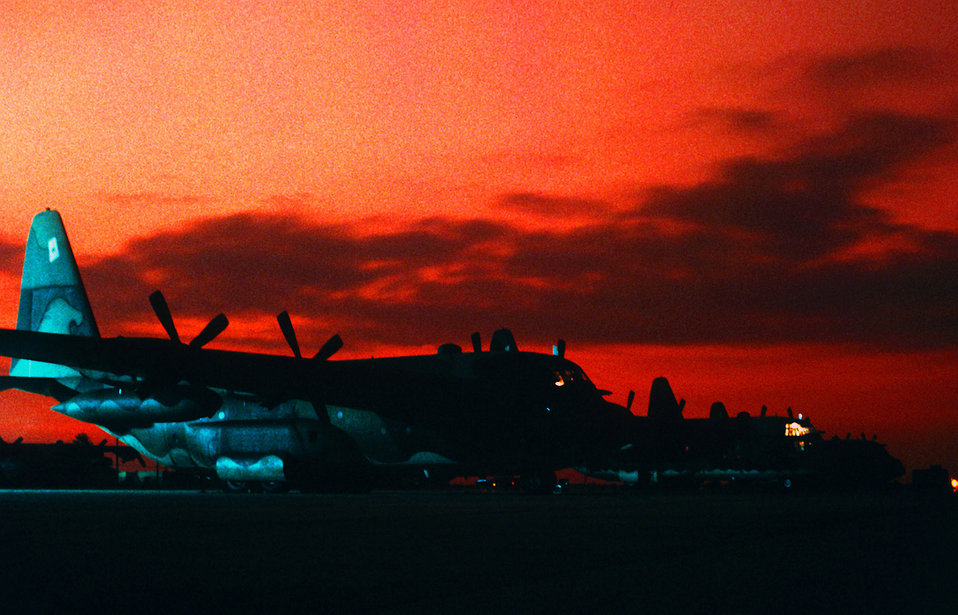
Hercules in the morning

LITTLE ROCK AIR FORCE BASE, Ark. -- C-130E Hercules aircraft are prepared for an early morning flight.